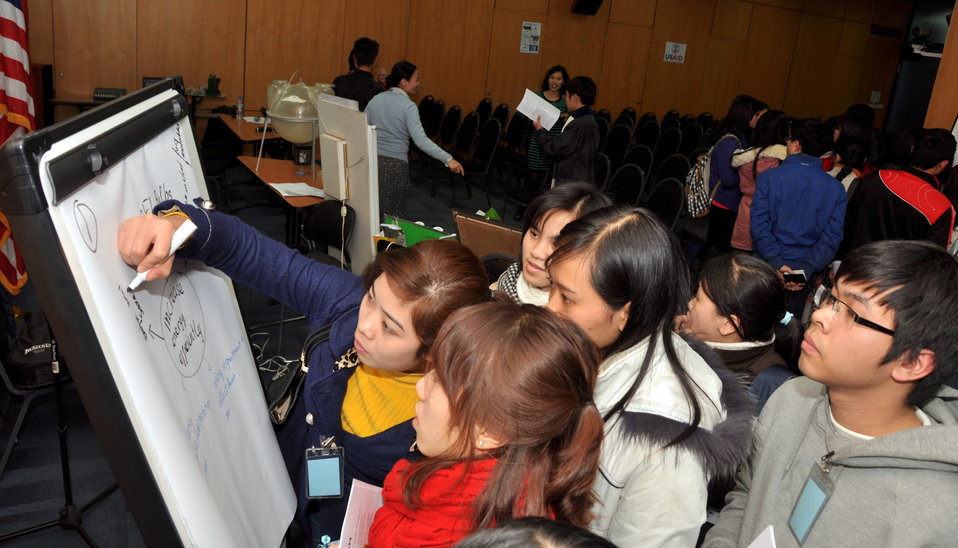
Speaker program on Climate Change and Clean Energy at the American Center

Hanoi, January 16, 2013